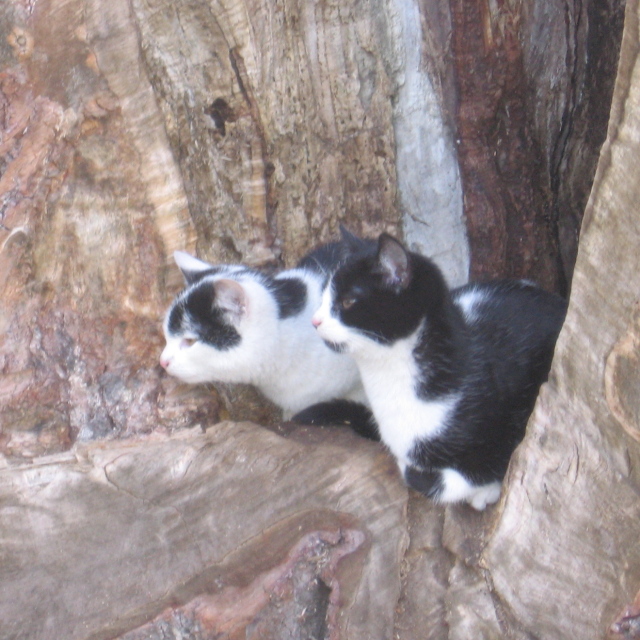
Kittens in a hollow